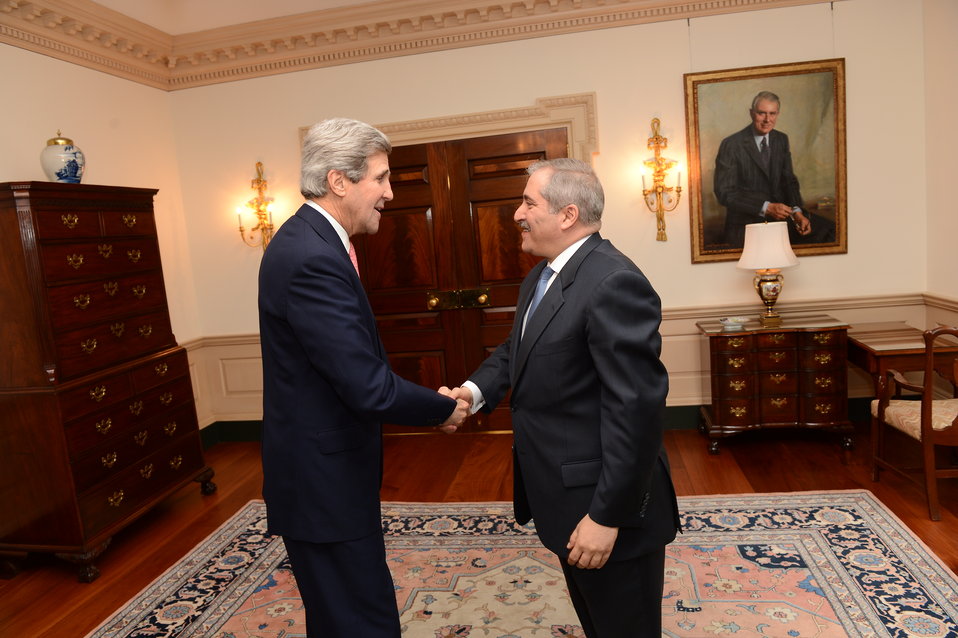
Secretary Kerry Shakes Hands With Jordanian Foreign Minister Judeh

U.S. Secretary of State John Kerry shakes hands with Jordanian Foreign Minister Nasser Judeh after their bilateral meeting at the U.S. Department of State in Washington, D.C., February 13, 2013.